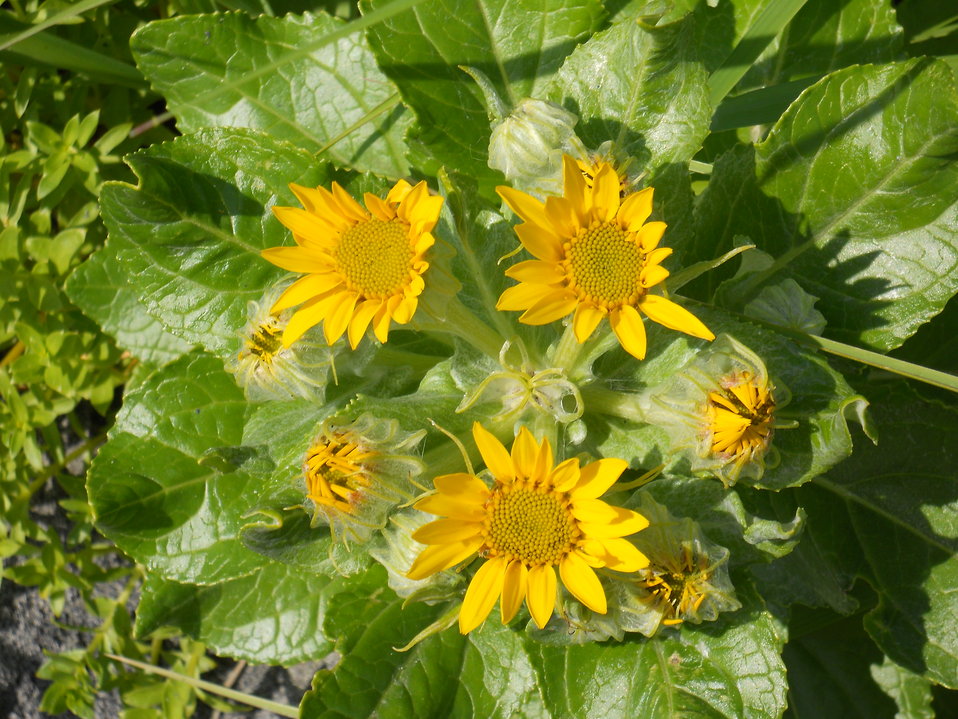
Arnica (2)

Credit: USFWS
Photo taken by a Salmon Camp participant during a nature photography activity.

Source and Contact: Kodiak National Wildlife Refuge